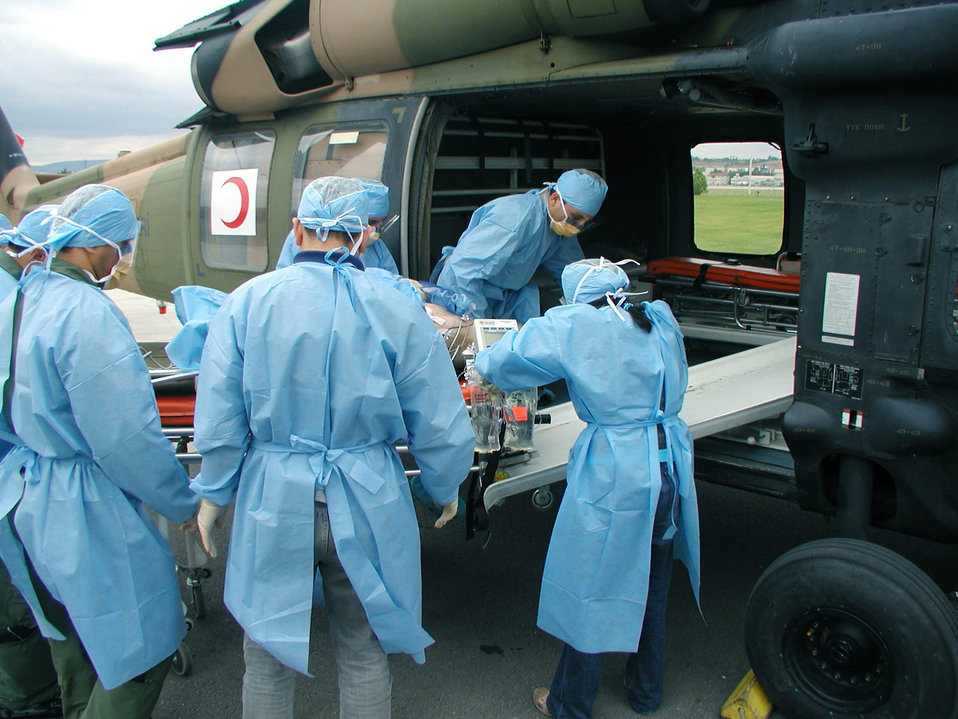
DIMO strengthening medical ties worldwide

ANKARA, Turkey -- Turkish medics practice newly acquired skills by loading an animal during a Defense Institute for Medical Operations aeromedical evacuation and critical-care transportation course given at the Gulhane Military Medical Academy here. Students included Turkish physicians, nurses and medical technicians.